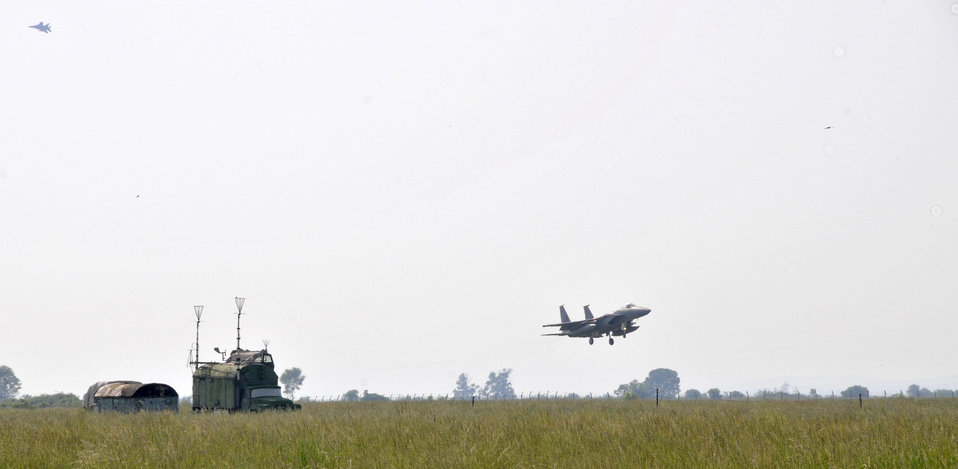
U.S. and Bulgarian airmen train together

An F-15 Eagle pilot lands May 13, 2010, at Graf Ignatievo Air Force Base in Plovdiv, Bulgaria. Airmen from the 48th Fighter Wing are in Bulgaria taking part in Sentry Gold, an exercise developed to familiarize U.S. pilots with the MiG airframes, build partnerships with the Bulgarian air force and assist them in their continued integration into NATO operations. The F-15 is from the 493rd Fighter Squadron at RAF Lakenheath, England.